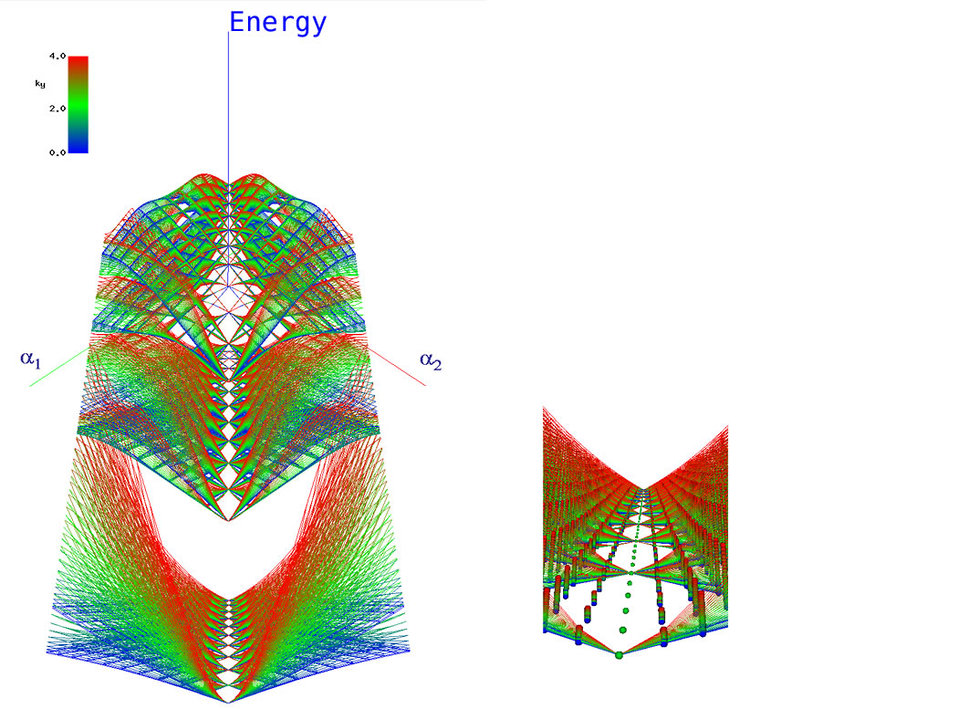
The Energy Spectrum of Ultracold Atoms in a Synthetic Magnetic Field

One of the driving forces behind studying ultracold atoms is the exquisite control and flexibility available in experiments. This flexibility enables us to engineer new states of matter, e.g. cold atom emulators of other physical systems which are not presently accessible to experiment. The figure on the left shows the spectrum of energy levels of a cold atom in a laser configuration designed to make the atom mimic an electron confined in two dimensions, in a generalization of a magnetic field called a 'non-Abelian gauge field.' The atom's energy levels are functions of three parameters: a1 and a2 are related to the strengths of the artificial magnetic field, and ky represents the atom's momentum. Along the line (a1 = a2), the field reduces to the usual (Abelian) magnetic field.